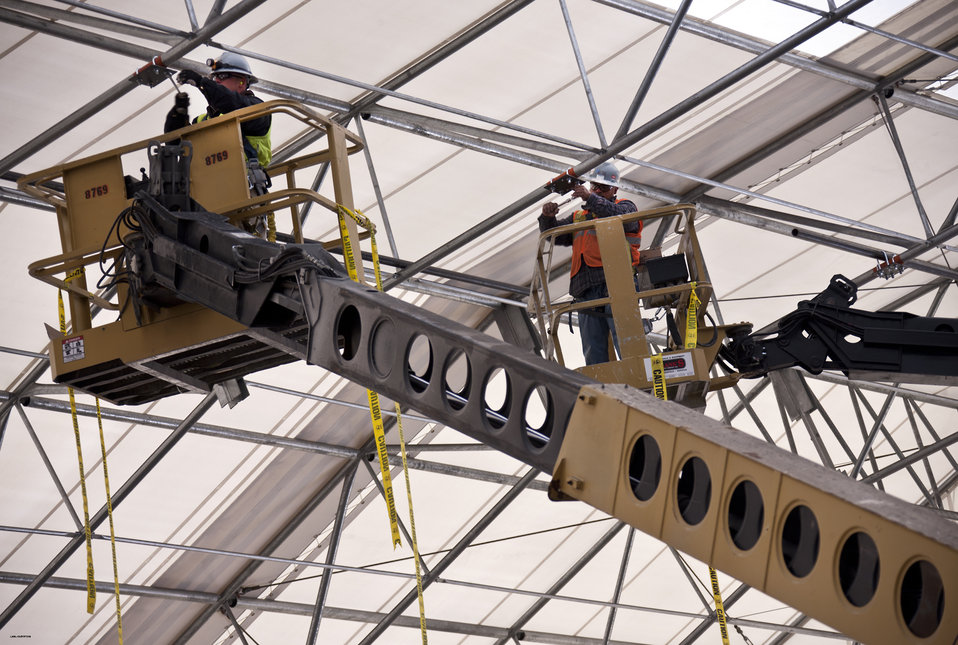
Construction Begins on New Waste Processing Facility

Construction has begun on a new facility that will help Los Alamos National Laboratory accelerate the shipment of transuranic (TRU) waste stored in large boxes at Technical Area 54, Area G.

The new facility will allow the Lab to repackage boxes as large as 25 feet long that contain TRU waste from as long ago as the 1970s.